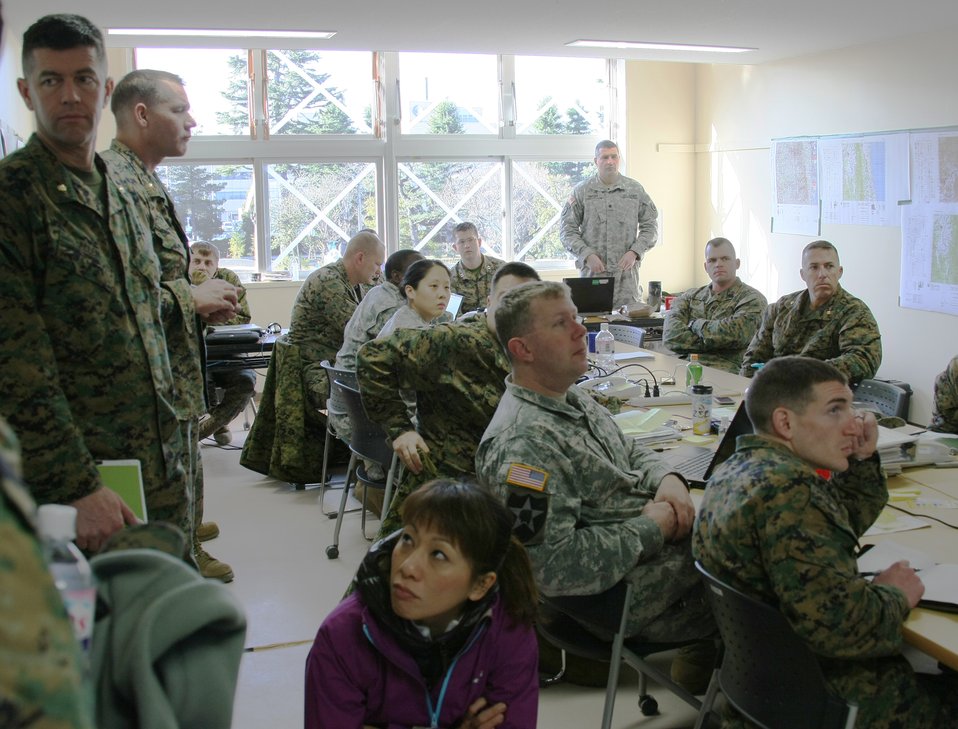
Disaster Relief Support

Damage assessment at Sendai